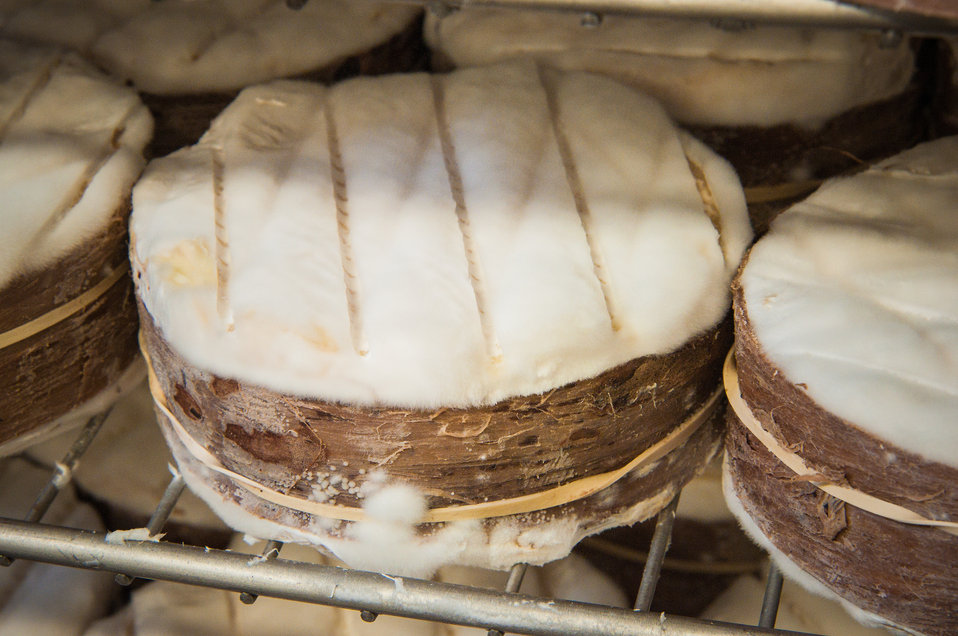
Harbison cheese is a bark-wrapped, bloomy-rind cheese with sweet-cream flavors produced by The Cellars at Jasper Hill in Greensboro, VT. Each wheel is cinched with a cutting of spruce interior bark layer, harvested from the farm’s woodlot. This technique adds woodsy nuance to the ripening cheese, while providing structure as it dramatically softens over time. The resulting cheese is thick and spoon able complimented by the texture and flavor of its edible rind.The Cellars at Jasper Hill, an innovative 22,000 square foot underground facility consisting of seven ageing caves received a U. S. Department of Agriculture (USDA) Rural Development (RD) Business and Industry Guaranteed (BIG) Loan. This loan was used to construct state-of-the-art artesian cheese aging cave facility to support expanded on-farm value-added cheese production as well as contract aging for other local cheese makers so they may access the growing market for artisan cheese nationwide on Sep. 19, 2013.